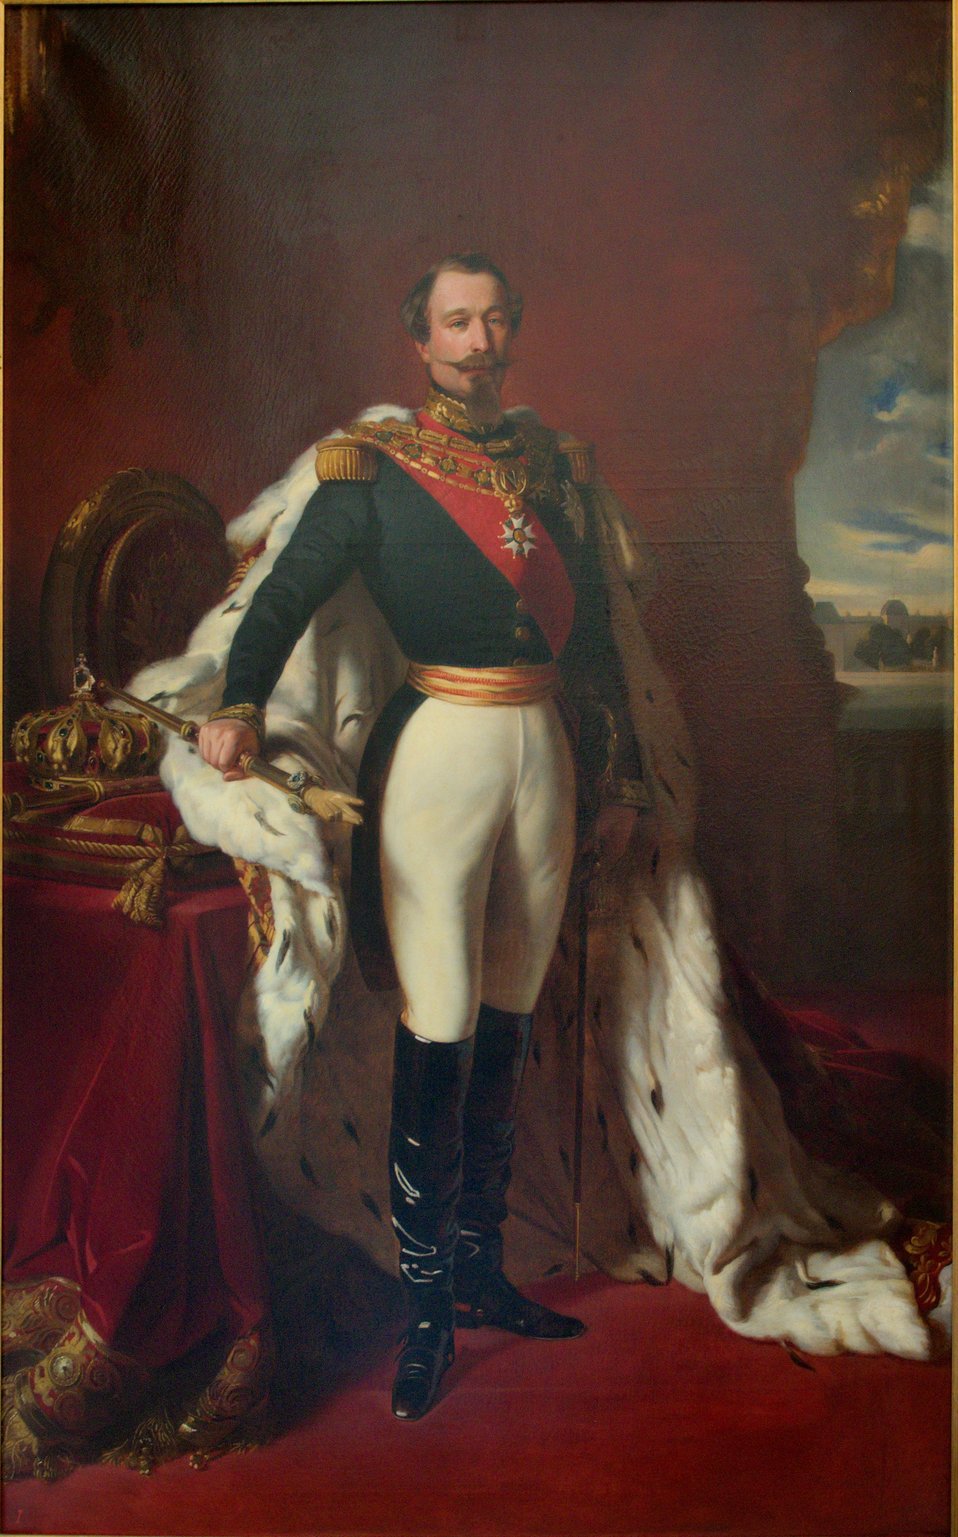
''L'empereur Napoleon III'' de Franz-Xaver Winterhalter